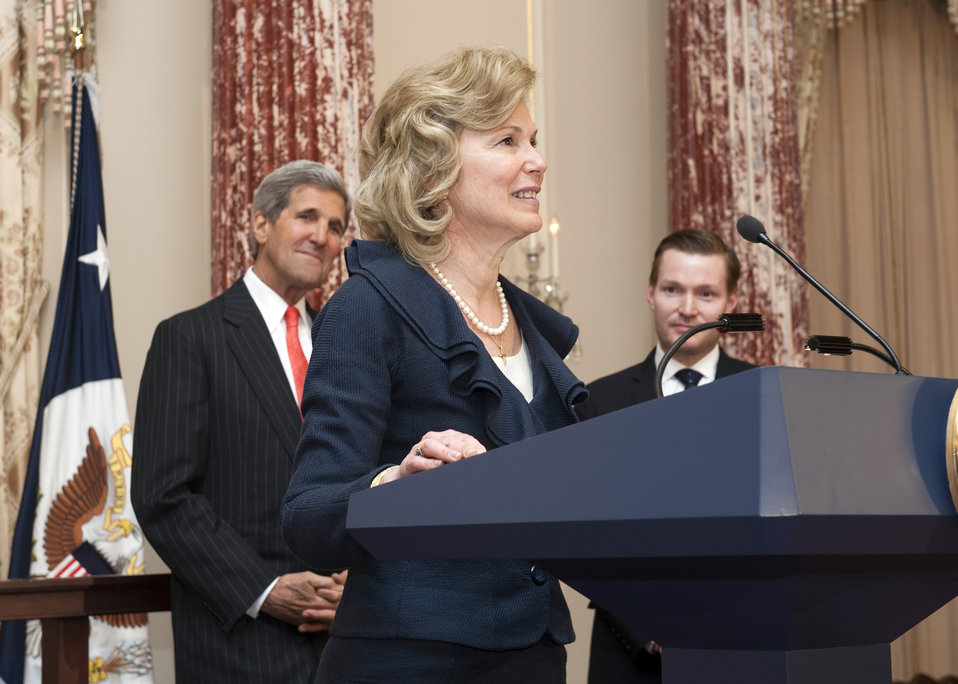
Ambassador Birx Delivers Remarks at Her Swearing-in Ceremony

With U.S. Secretary of State John Kerry looking on, Deborah Birx delivers remarks at her swearing-in ceremony to become Ambassador-at-Large and Coordinator of the United States Government Activities to Combat HIV/AIDS at the U.S. Department of State in Washington, D.C., on April 25, 2014.